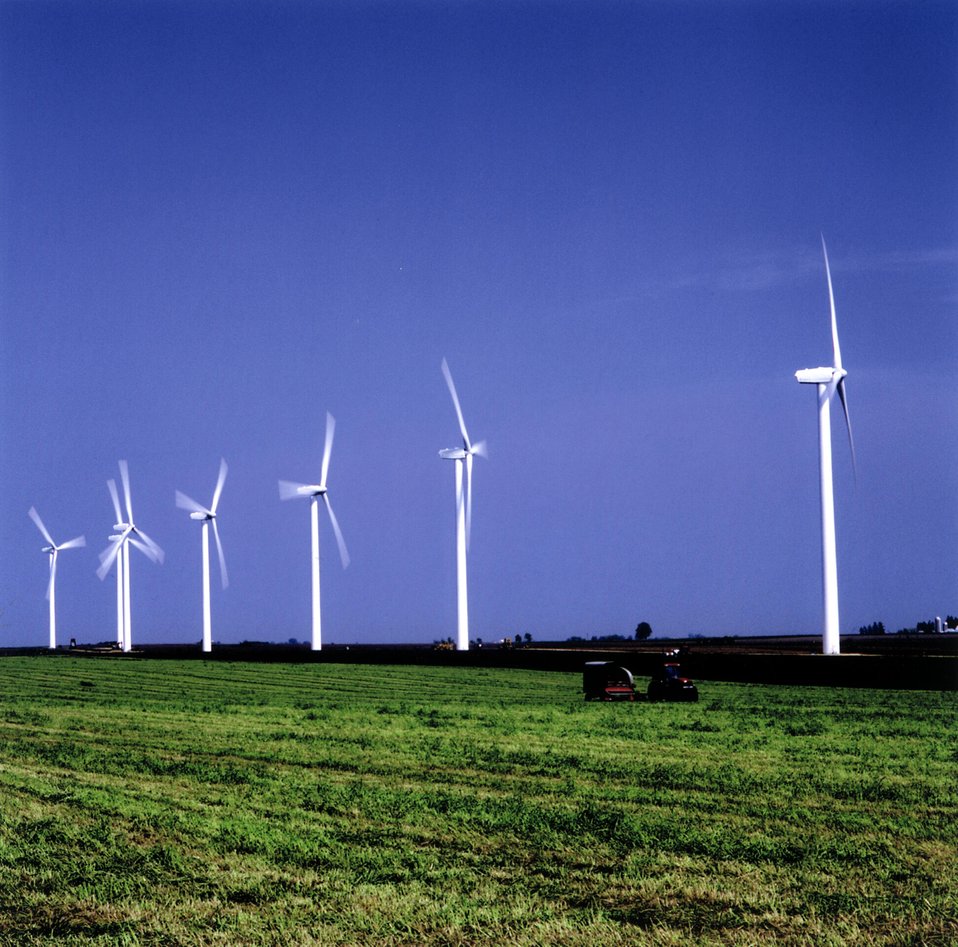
WIND TURBINES IN MONTFORD, WISCONSIN.